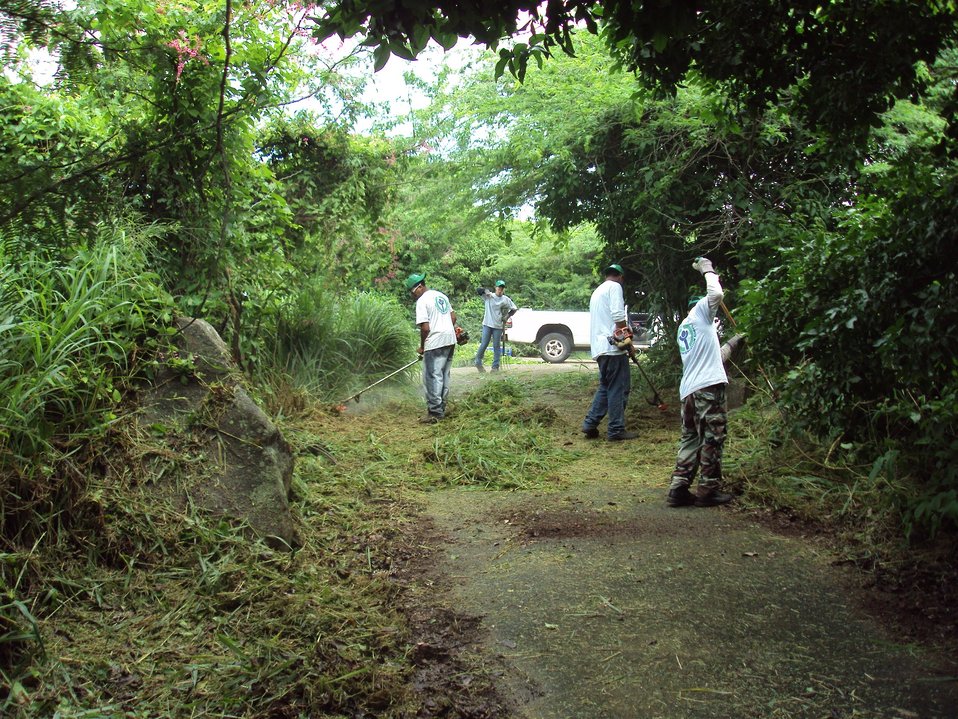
Culebra Natl Wildlife Refuge, Puerto Rico

Trail and Road Maintenance